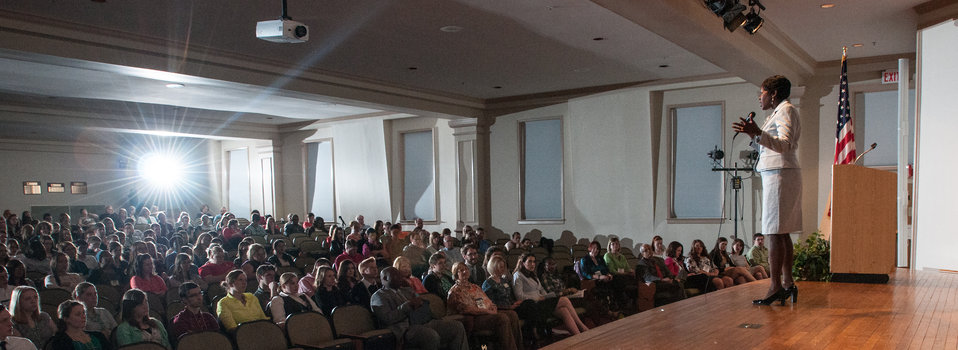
U.S. Department of Agriculture (USDA) Departmental Management Office of Advocacy and Outreach Director Carolyn Parker provided opening remarks to approximately 300 youth members, Extension Educators and 4-H Adult Volunteers from across the nation, as well as U.S. Territories at the 2013 National 4-H Conference, on Monday, April 8, 2013 in Chevy Chase, MD. National Institute of Food and Agriculture Director Dr. Sonny Ramaswamy provide additional remarks and Secretary Tom Vilsack will deliver the keynote address. The youth delegates are in grades 10-12 (15-19 years old). The purpose of the conference is to 1) engage 4-H youth in personal development experiences that will increase knowledge, resources, and skills; 2) discuss topics affecting youth and 4-H programming nationwide; and 3) empower and mobilize 4-H youth to create positive social change in their communities in a meaningful and genuine way. The conference also reinforces the rich history of 4-H and its valuable tie to USDA, Cooperative Extension and the Land-Grant University System.